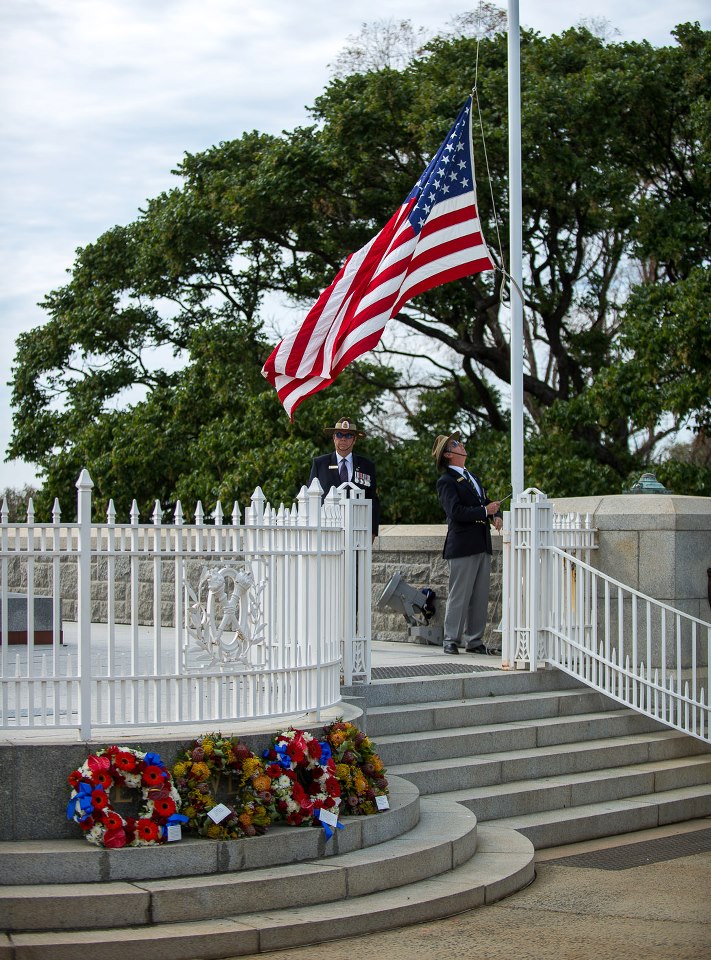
The American flag is raised during a wreath-laying ceremony at the State War Memorial at Kings Park and Botanic Garden in Perth, Australia, November 14, 2012. [U.S. Embassy in Canberra, Australia photo by Travis Longmore/ Public Domain]